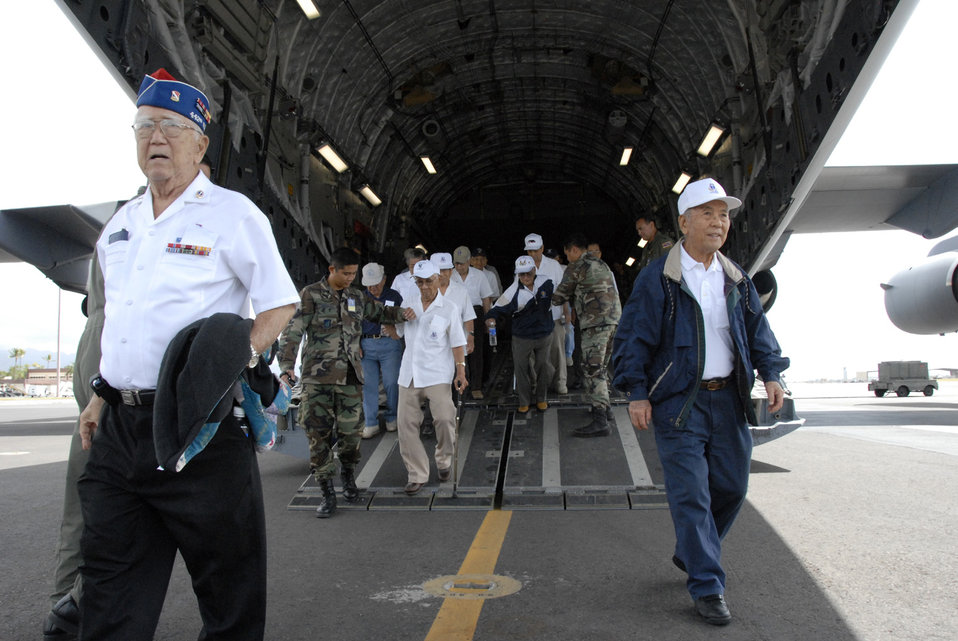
WWII vets fly

Veterans from the 442nd Regimental Combat Team and the 100th Infantry Battalion exit the back of the